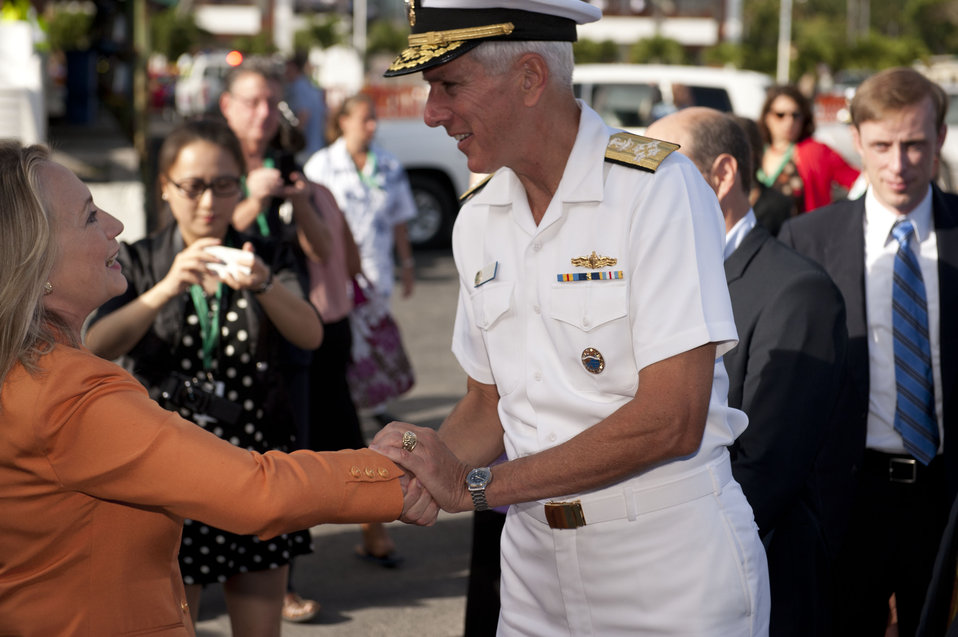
Secretary Clinton With Admiral Locklear at Pacific Islands Forum

U.S. Secretary of State Hillary Rodham Clinton and Admiral Samuel J. 'Sam' Locklear III, Commander U.S. Pacific Command, shake hands at the Pacific Islands Forum in the Cook Islands, August 31, 2012.